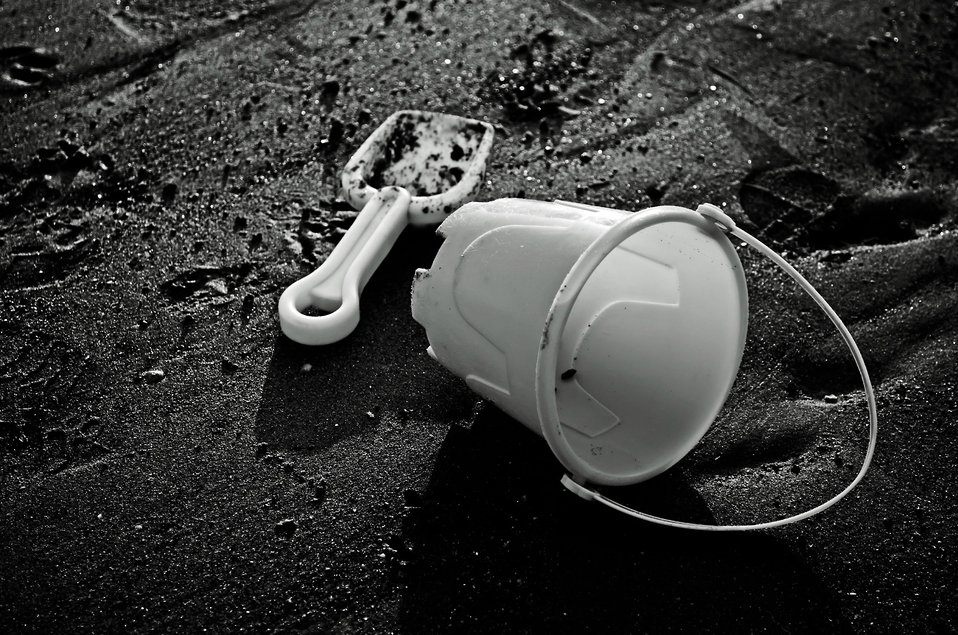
Lost bucket.